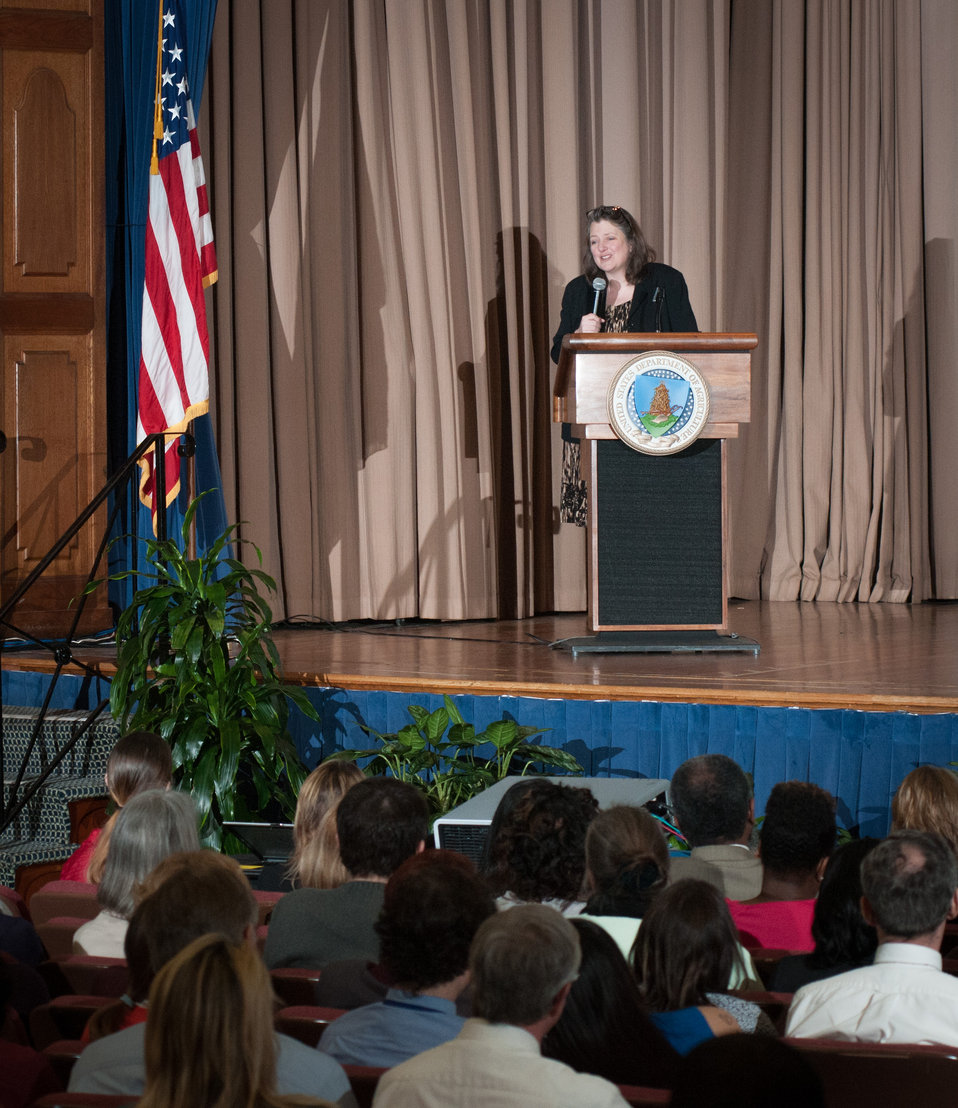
U.S. Department of Agriculture (USDA) Deputy Secretary Kathleen Merrigan, Ph.D., makes opening remarks, during the “Women Inspiring Innovation Through Imagination: Celebrating Women in Science, Technology, Engineering, and Mathematics” event, onThursday, March 21, 2013, in Washington, D.C.